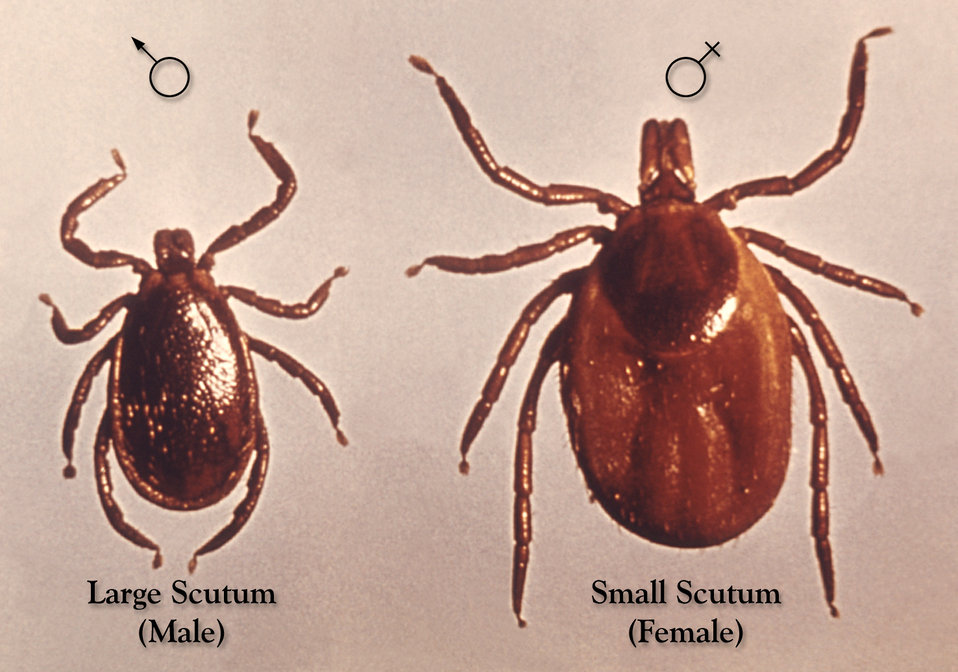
This image depicts two hard ticks with the male on the left, and the female on the right.